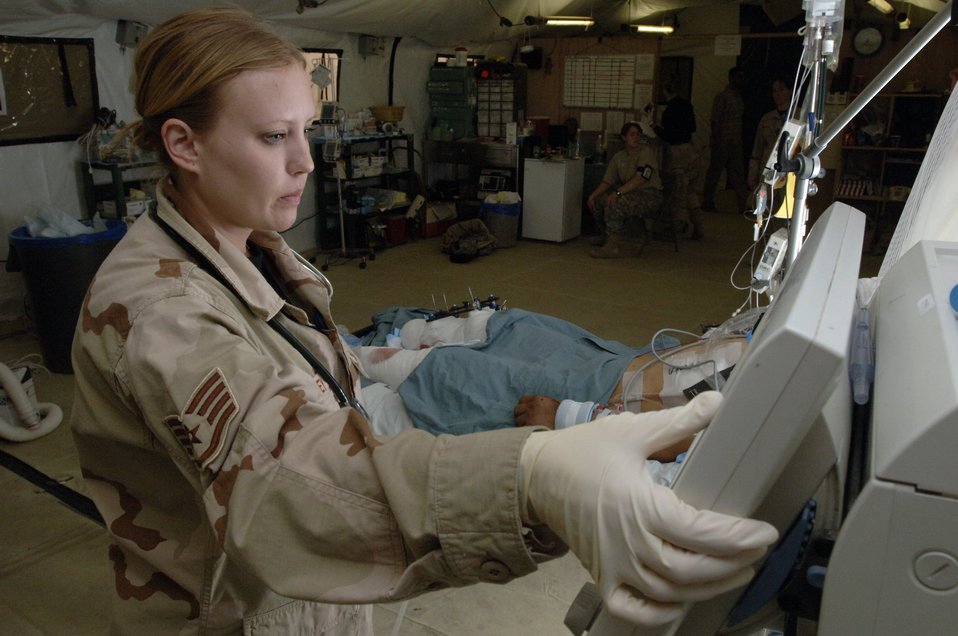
Yoga fitness

Balad Air Base, Iraq (AFPN) -- Staff Sgt. Bonnie McKinley checks the respiration of an Iraqi soldier who was injured by an improvised explosive device. After weighing 215 pounds following a pregnancy, Sergeant McKinley began practicing yoga. Now she weighs 140 pounds and teaches a yoga class here. She is a respiratory therapist deployed from Sheppard Air Force Base, Texas.